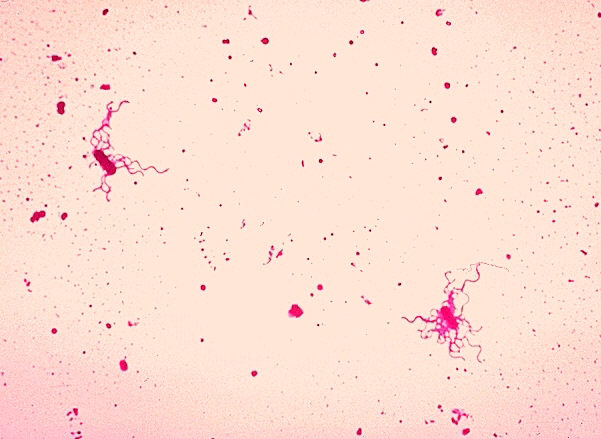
Clostridium novyi. Leifson flagella stain (digitally colorized).